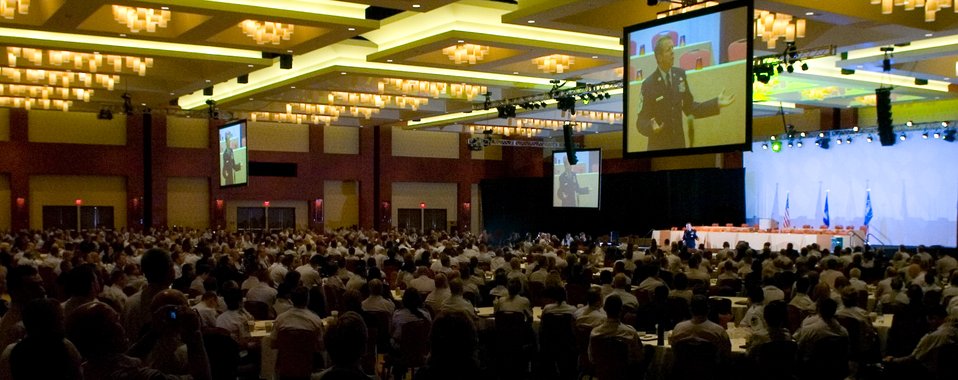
CMSAF highlights warrior Airmen, Air Force focus areas

Chief Master Sergeant of the Air Force Rodney J. McKinley speaks during the Air Force Sergeants Association's annual Professional Airmen's Conference and International Convention Aug. 26 in San Antonio.